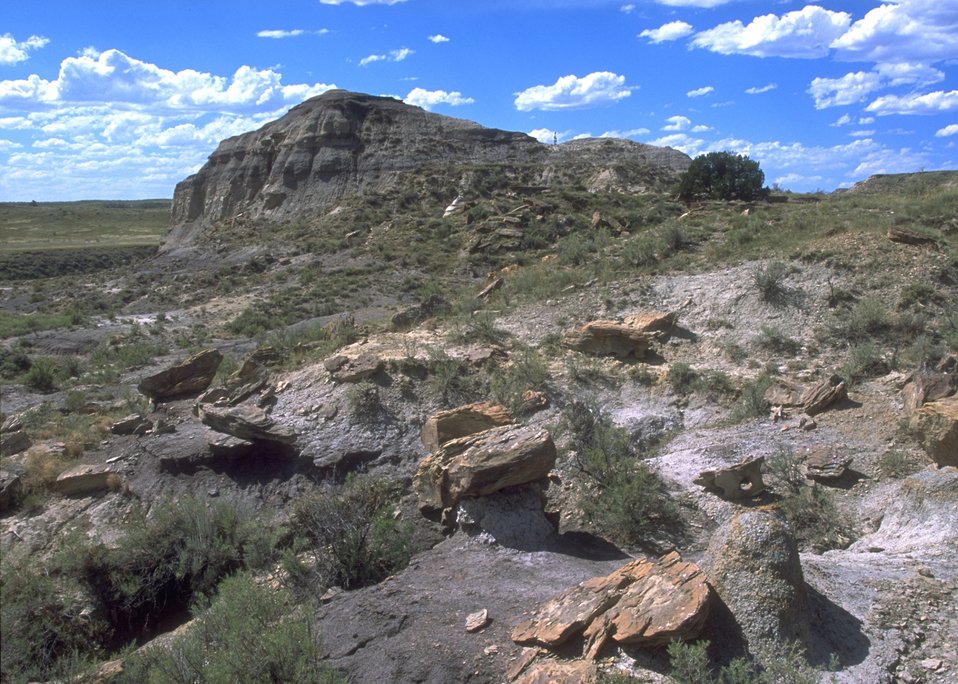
View of formation where fossils are found in Lance Creek Fossil Area, Newcastle Field Office.